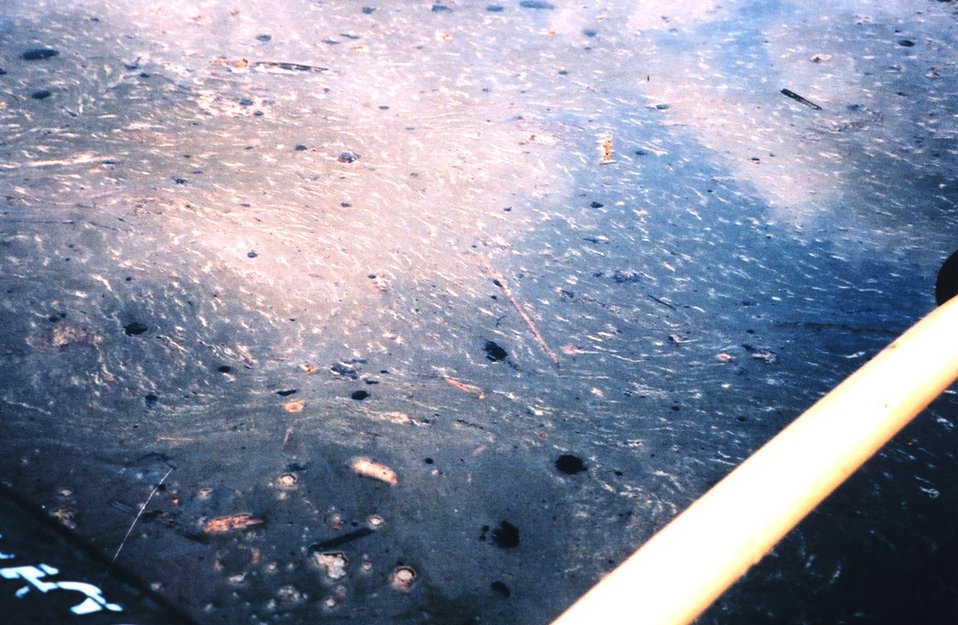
Oil globules mixed with heavy pollen from surrounding vegetation following the April 7th Swanson Creek oil spill.